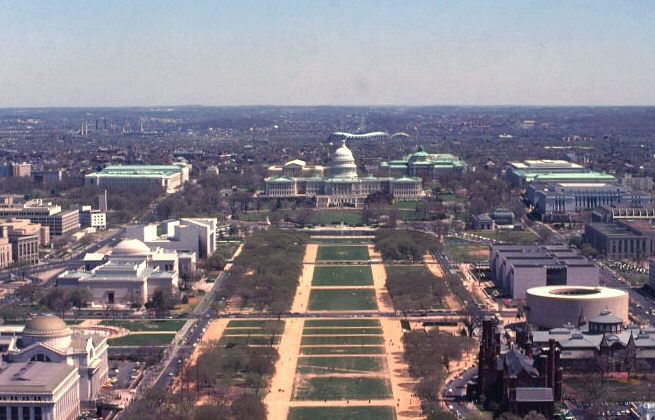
Capitol Mall from top of Washington Monument.